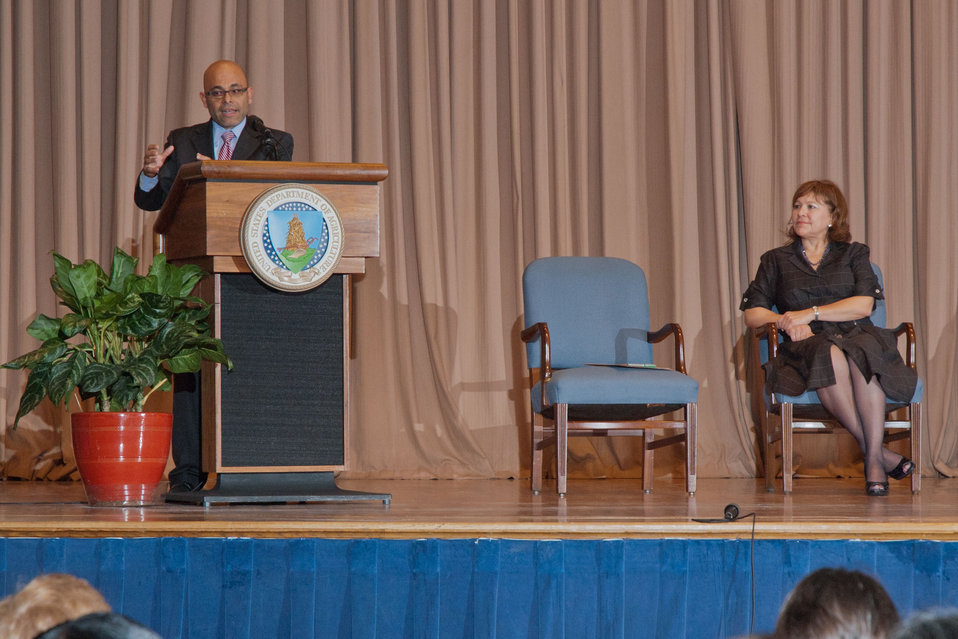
White House Initiative on Educational Excellence for Hispanic Americans Deputy Director José Rick was the keynote speaker for the observance of National Hispanic Heritage Month at the United States Department of Agriculture (USDA) in the Jefferson Auditorium, in Washington, D.C. on Thursday, September 15, 2011.